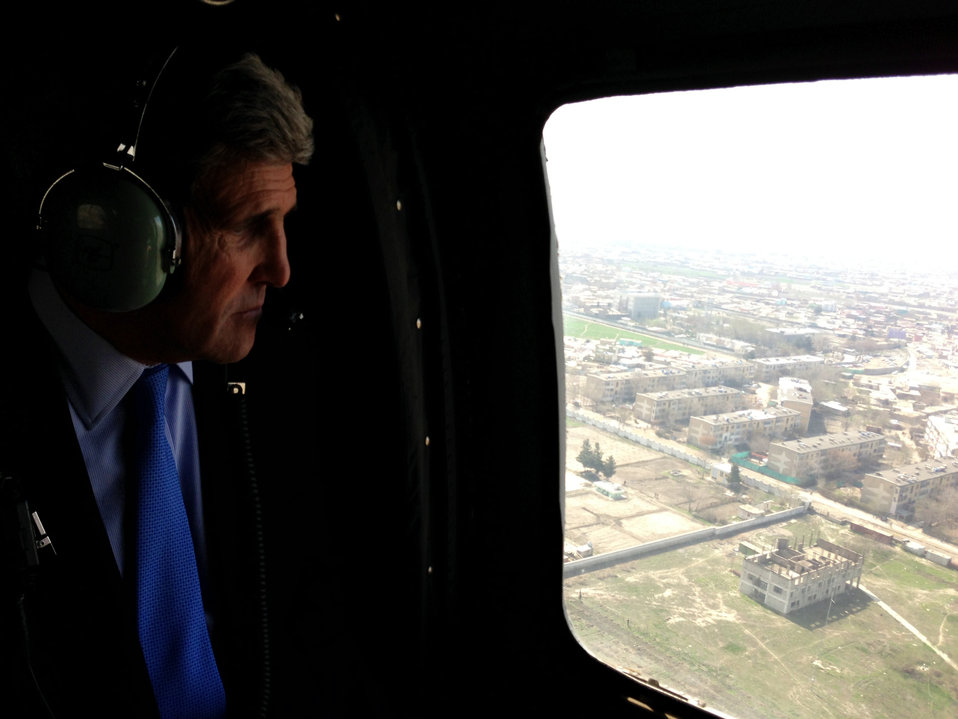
Secretary Kerry in a Helicopter Over Afghanistan

U.S. Secretary of State John Kerry looks out the window of a Blackhawk helicopter as he flies over Kabul, Afghanistan, March 26, 2013.